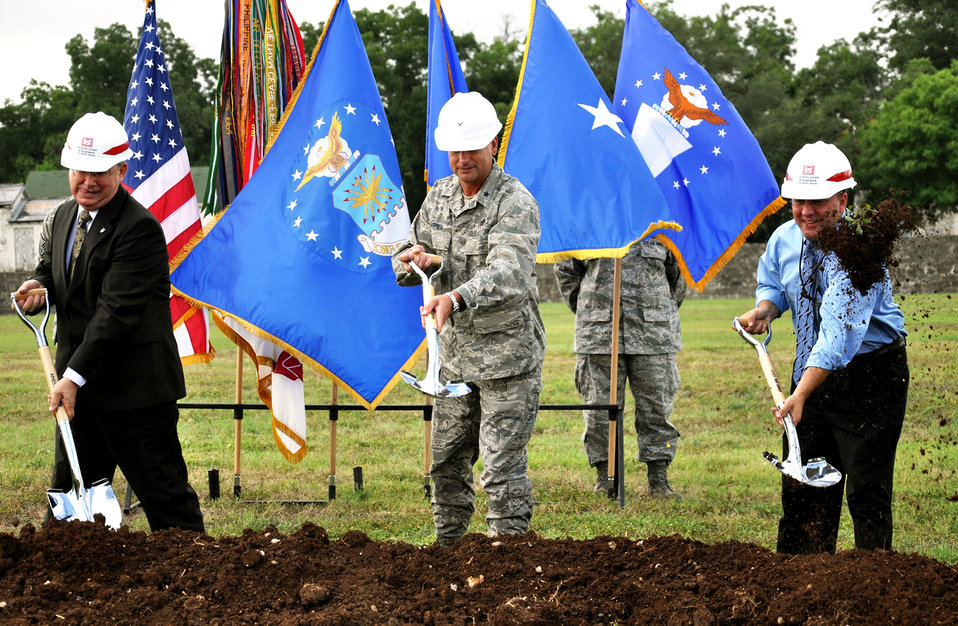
502nd ABW breaks ground on new headquarters

From left, Dr. Cem Maxwell, Brig. Gen. Leonard Patrick and Frank Simas turn dirt July 14, 2010, during the groundbreaking ceremony for the 502nd Air Base Wing headquarters building. Dr. Maxwell is the San Antonio Joint Program Office deputy director, General Patrick is the 502nd Air Base Wing commander and Mr. Simas is the deputy of the Joint Project Management Office.